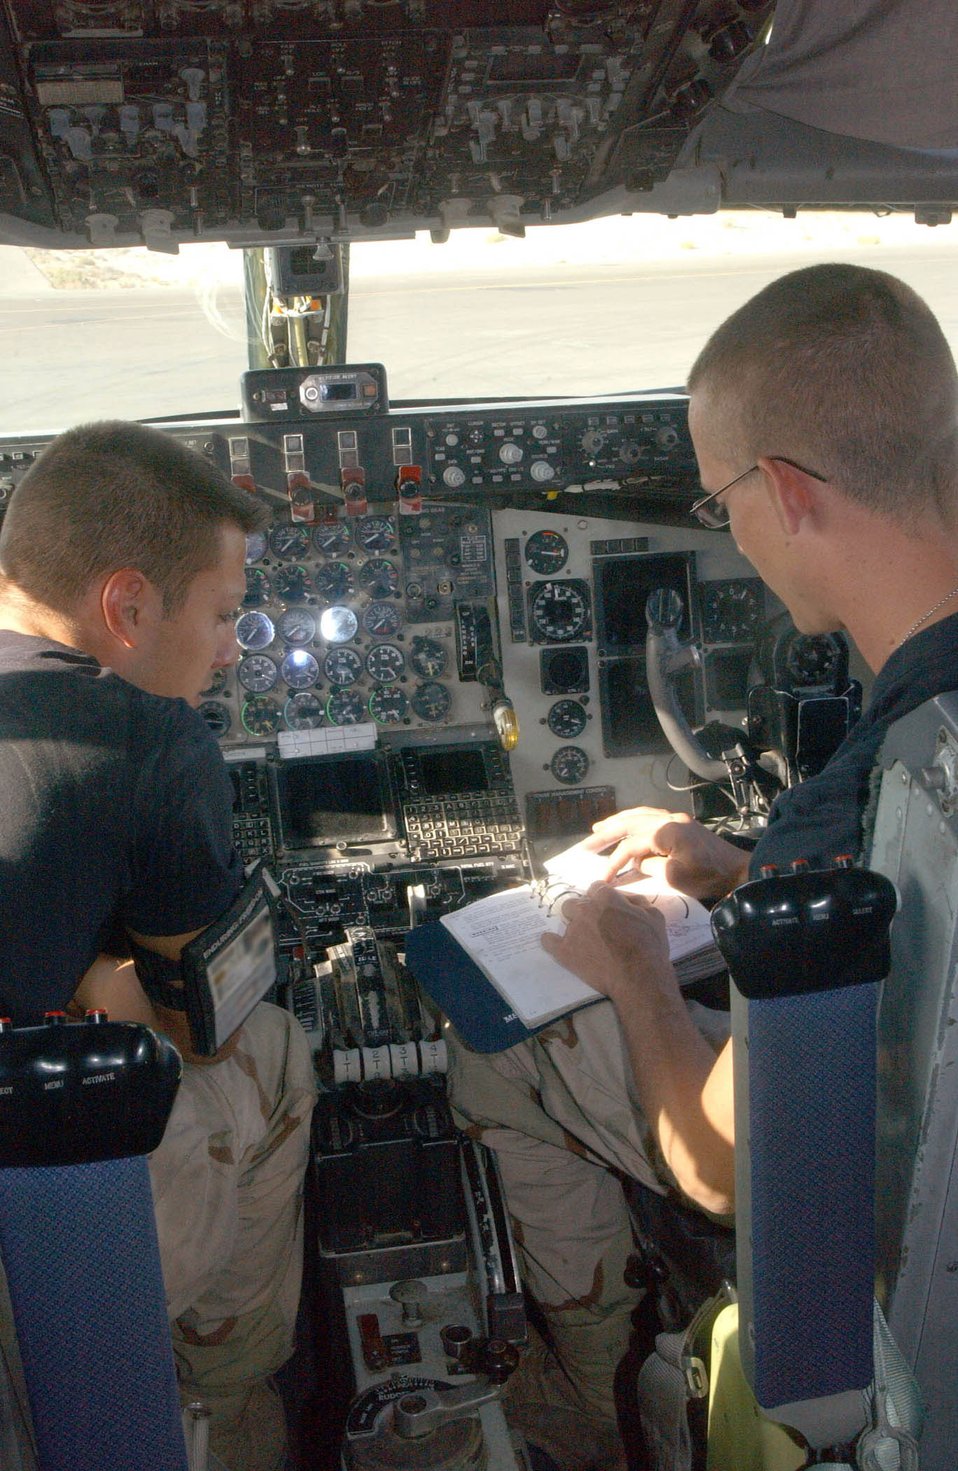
Tanker work

SOUTHWEST ASIA (AFPN) -- Senior Airman Ryan Winn (left) and Staff Sgt. J.C. Chandler review technical data before a maintenance engine run on a KC-135 Stratotanker at a forward deployed location. Both Airmen are with the 380th Expeditionary Aircraft Maintenance Squadron and deployed from McConnell Air Force Base, Kan.